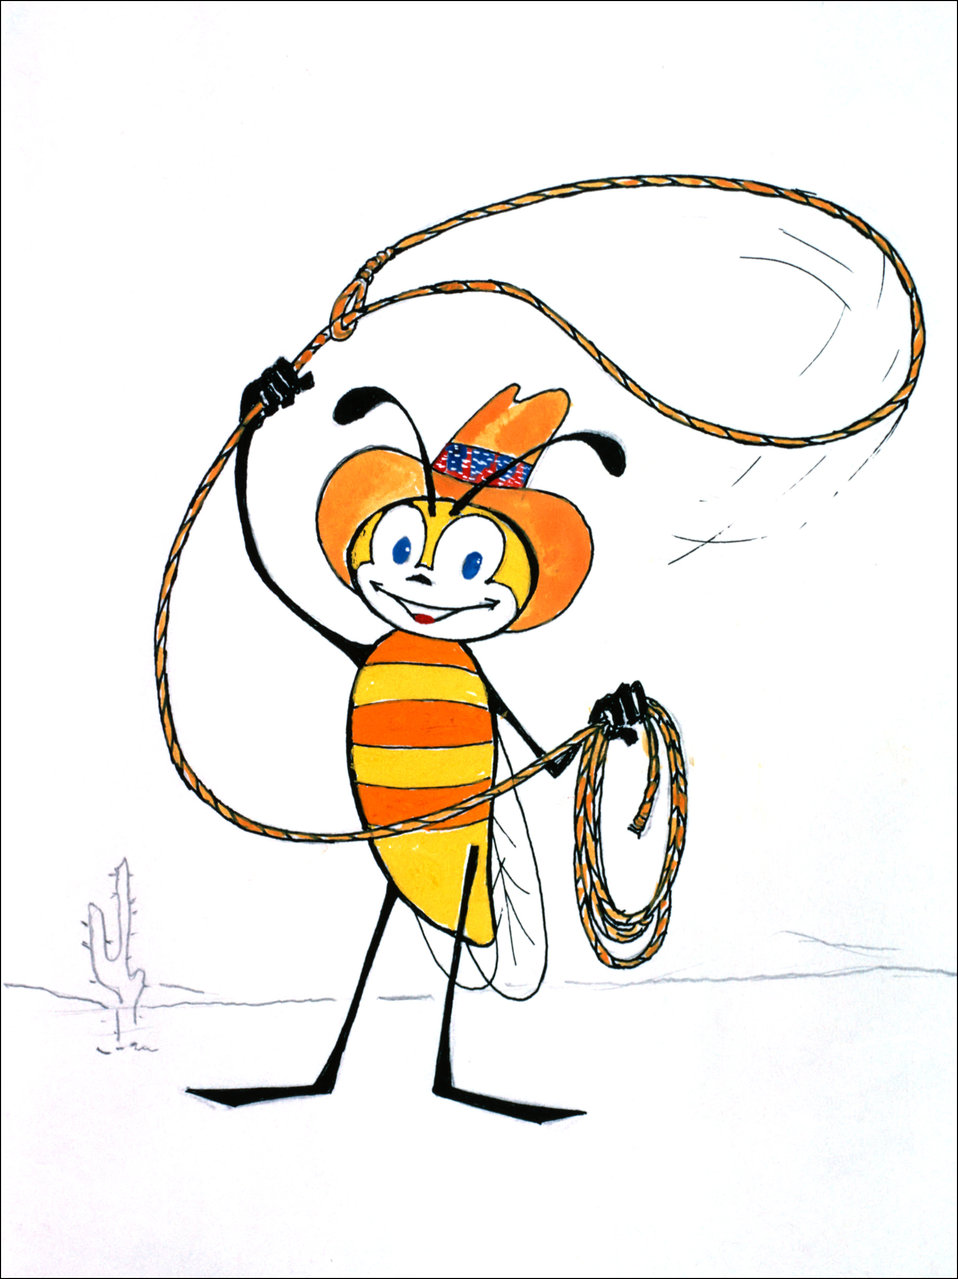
This color sketch, which was drawn in 1962, showed the CDC's national symbol of public health, the "Wellbee", and was created by CDC's staff artist Harold M. Walker, who had previously worked as an animator in Hollywood, California.